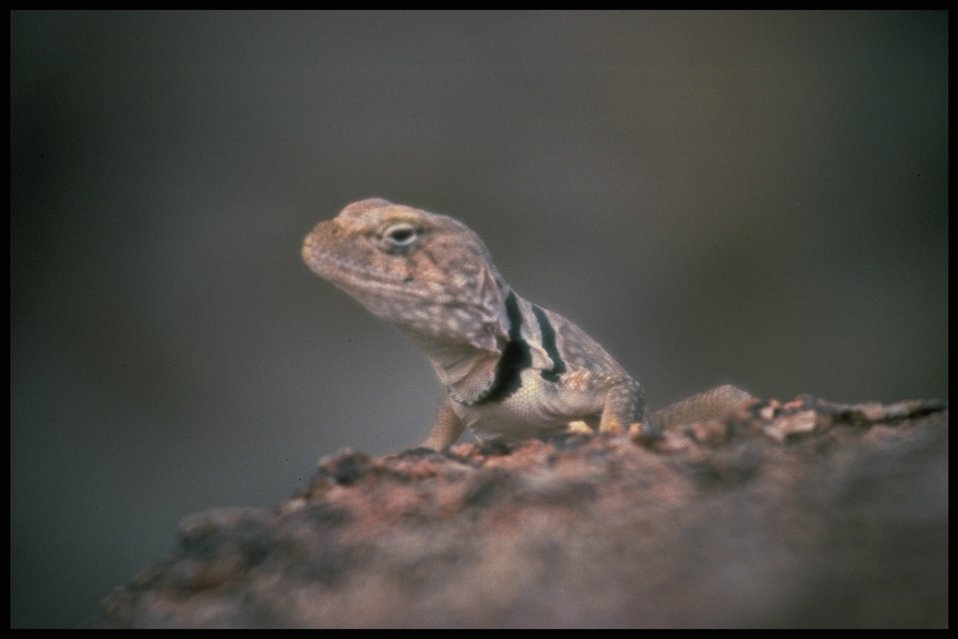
In Arizona, a lizard is a common sight on public wilderness and even in populated suburban areas.